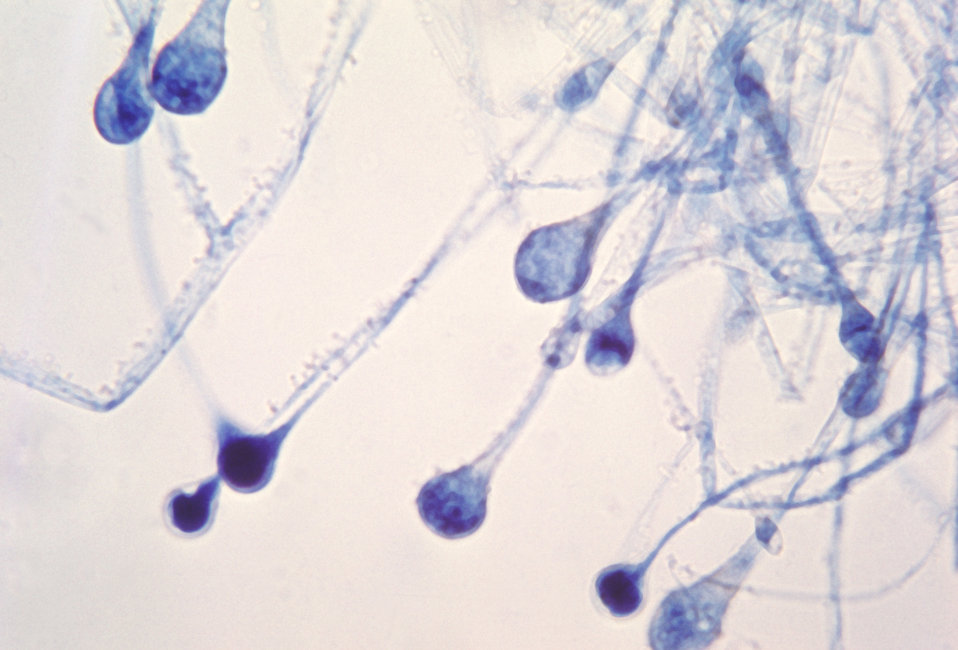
This photomicrograph reveals a number of young sporangia of a Mucor spp. fungus.